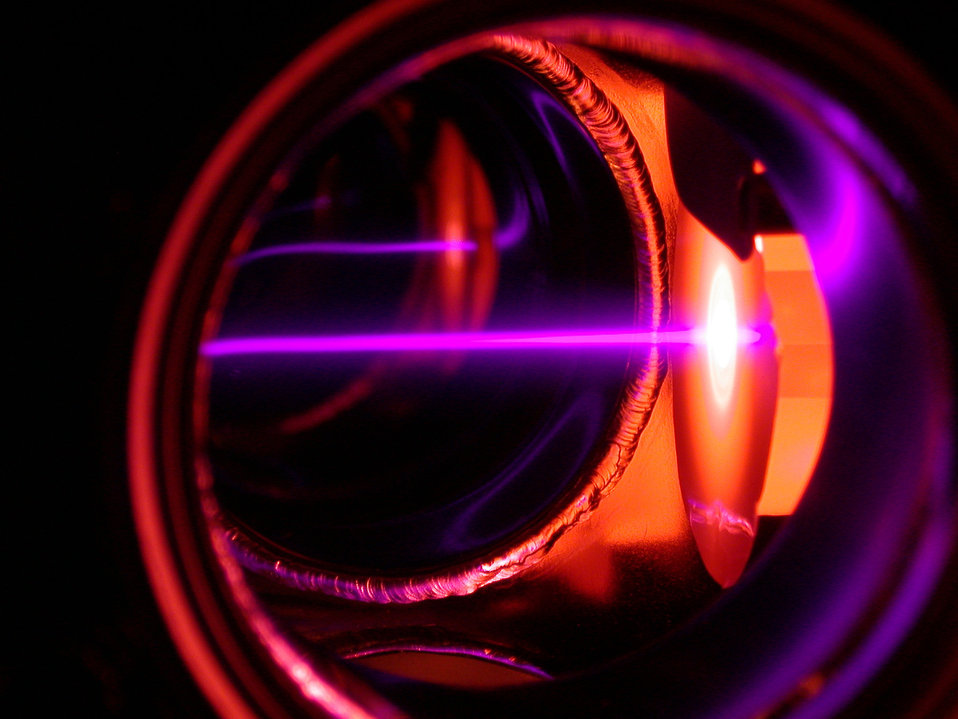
Trapping Erbium

A purple laser beam slows erbium atoms (the purple beam traveling right to left) emerging from an oven at 1300°C, in preparation for trapping and cooling. The unusual properties of erbium atoms and the new capability to trap them could lead to development of novel technologies.